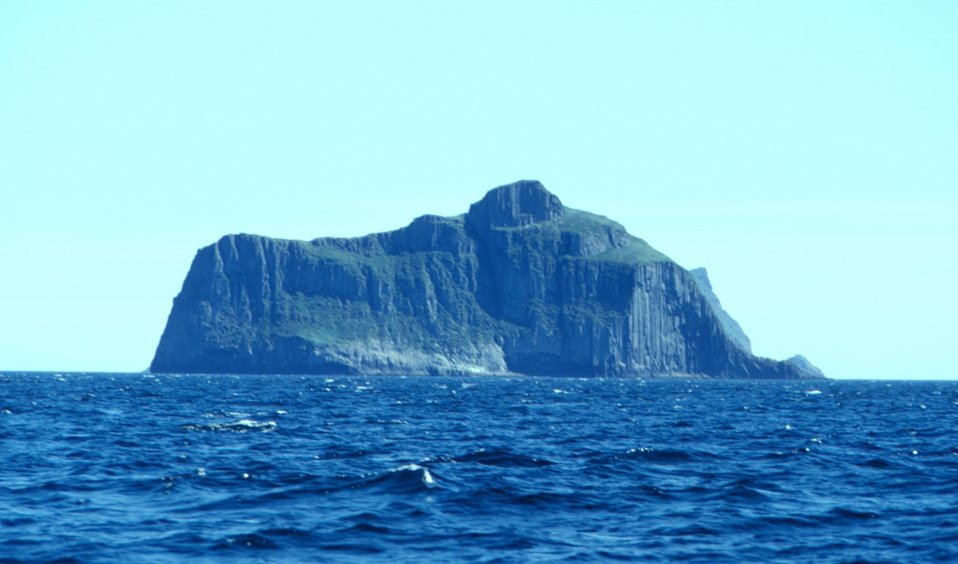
An island in the vicinity of Castle Cape.